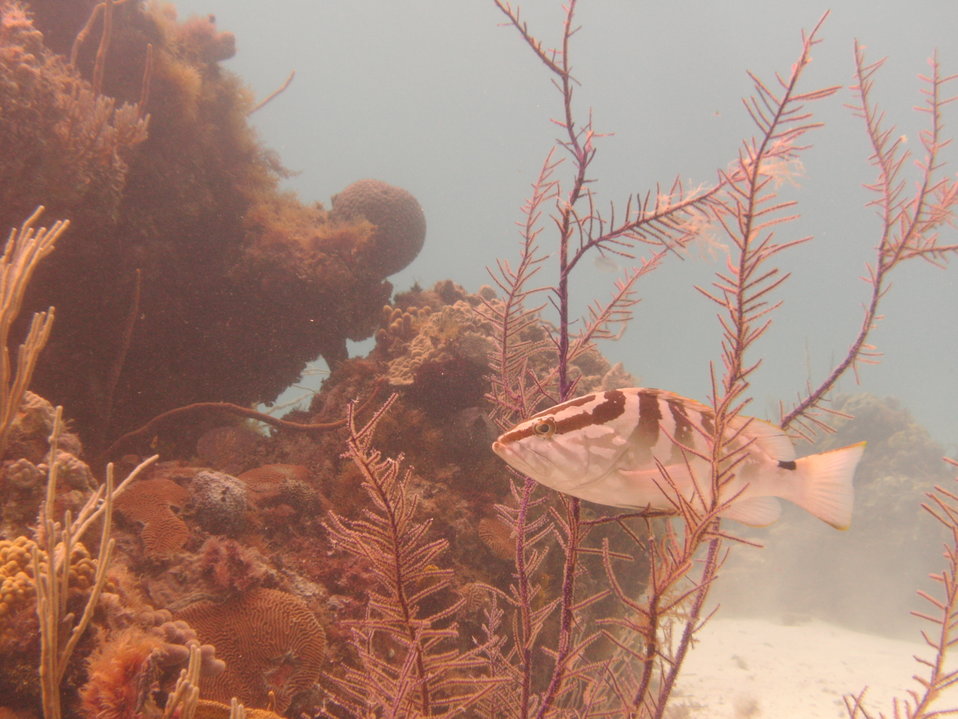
Nassua Grouper spotted during a practice dive

This Nassua Grouper (epinephelus striatus) was photographed in 30 feet of water at Barracuda Reef off of Nassua, Bahamas.

Particularly when diving is a part of your work, it's vital to your health and safety to practice regularly at home or when traveling!